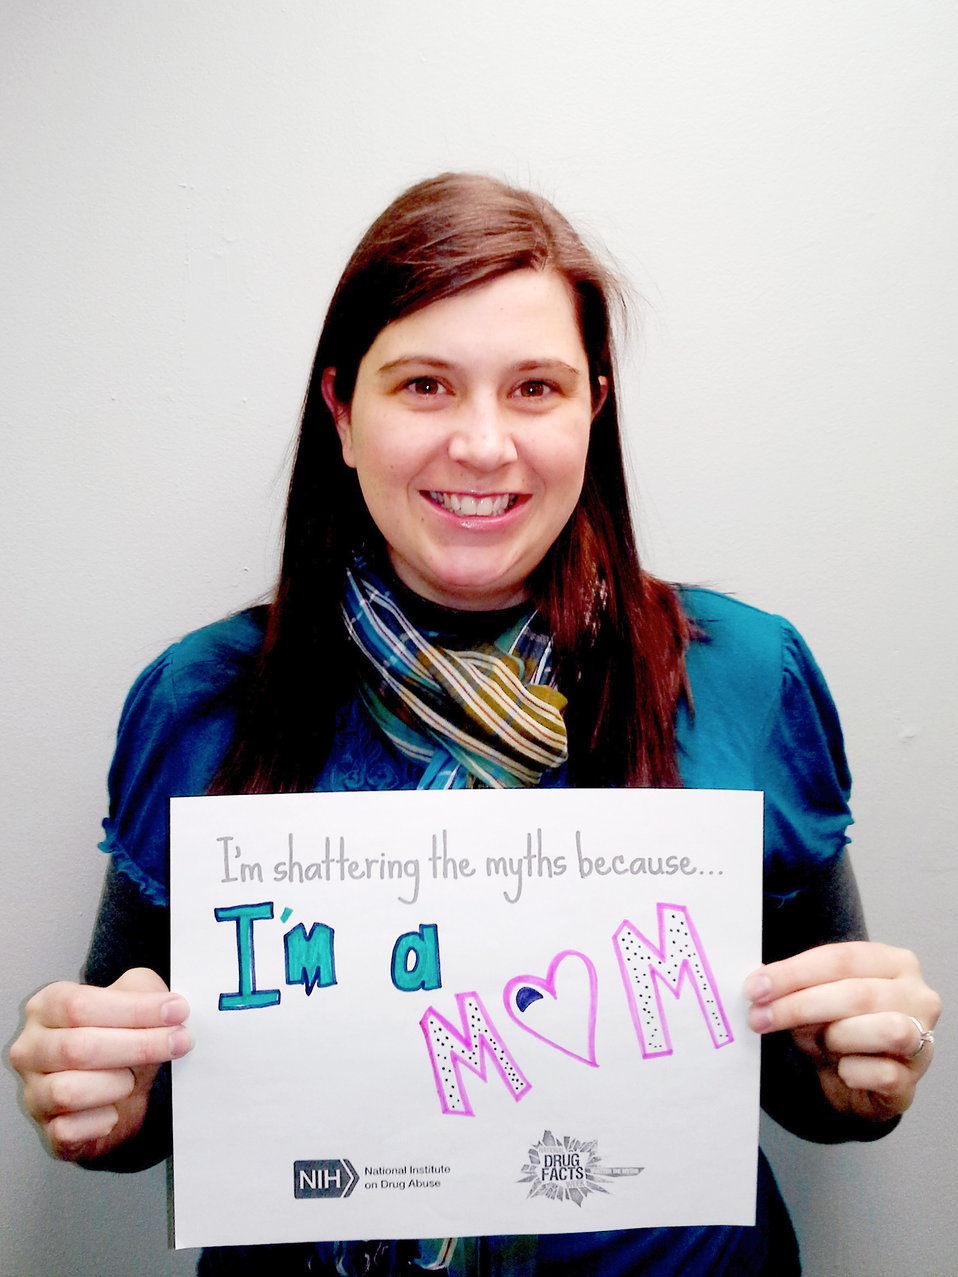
Shattering the Myths campaign in Winona, Minnesota